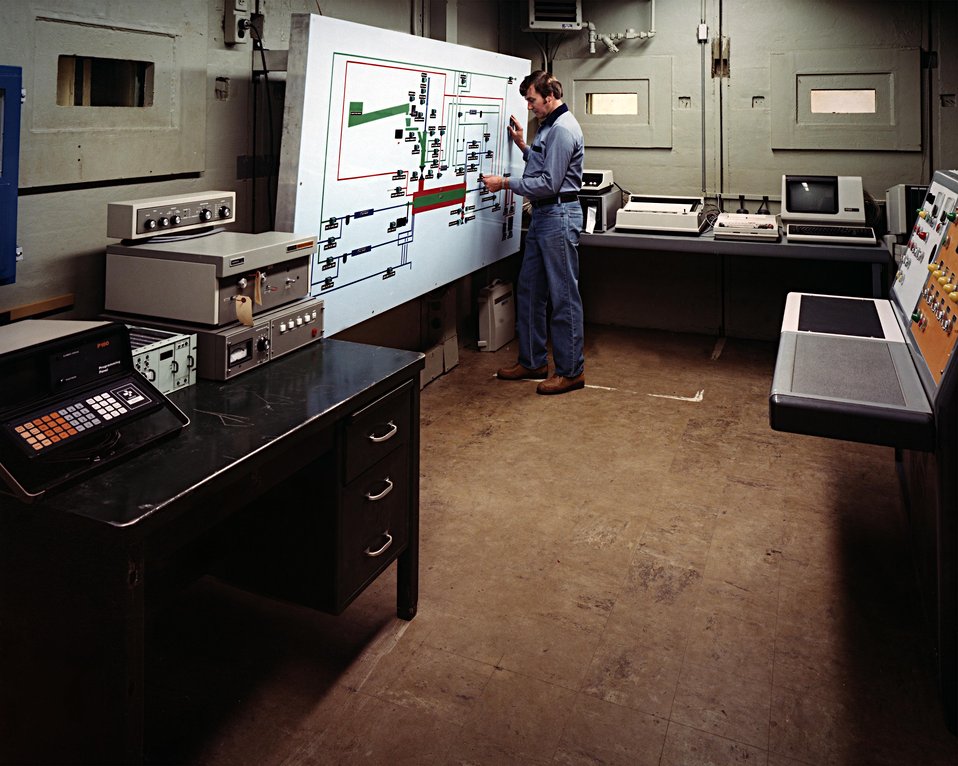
PDU CONTROL ROOM INSIDE THE BLOCKHOUSE.

RESEARCHERS WILL ASSESS THE FEASIBILITY OF GASIFYING BIOMASS TO PRODUCE FUEL IN A SMALL, CRITICAL PRESSURE, LOW TEMPERATURE, WATER/STEAM GASIFIER. IN THE GASIFIER, BIOMASS (WOOD,PLANT OR ANIMAL WASTES, ETC.) IS MIXED WITH STEAM AND OXYGEN AT HIGH TEMPERATURES AND PRESSURES TO PRODUCE GAS, LIQUID FUELS AND/OR FUEL OIL. A LOW-COST SYSTEM WAS PRO POSED, DIFFERENT TYPES OF BIOMASS WERE STUDIED, MODELS WERE ESTABLISHED, AND A THREE DRY TONS PER-DAY PROCESS DEVELOPMENT UNIT WAS DESIGNED. IN ADDITION, AN ECONOMIC ASSESSMENT WAS MADE CONCERNING THE MEDIUM BTU GAS END PRODUCT.